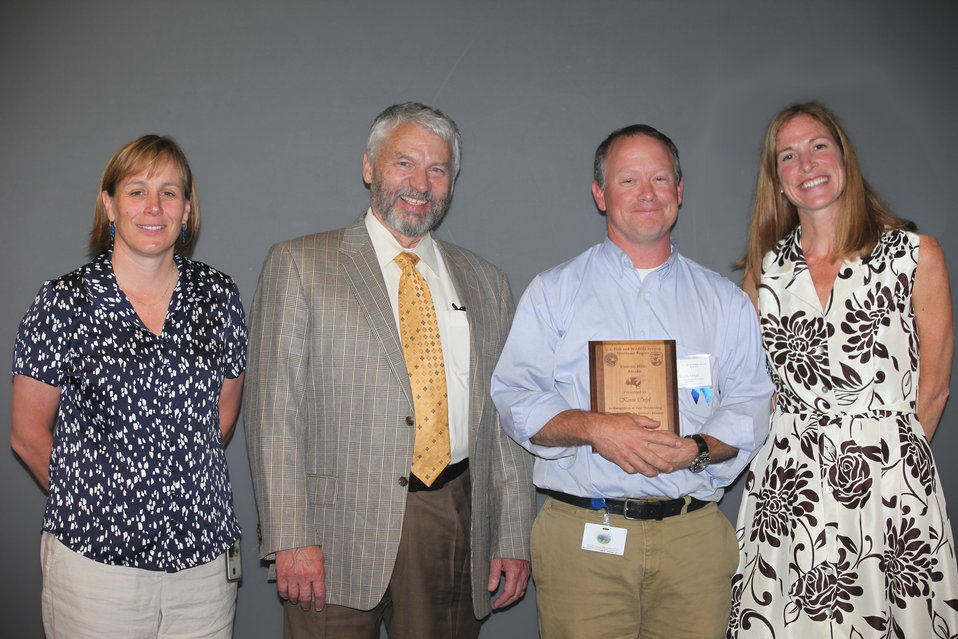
Kevin Ortyl of engineering and the National Wildlife Refuge System
From left to right: Deputy Regional Director Deb Rocque, Deputy Director Rowan Goul, Kevin Ortyl, and Regional Director Wendi Weber